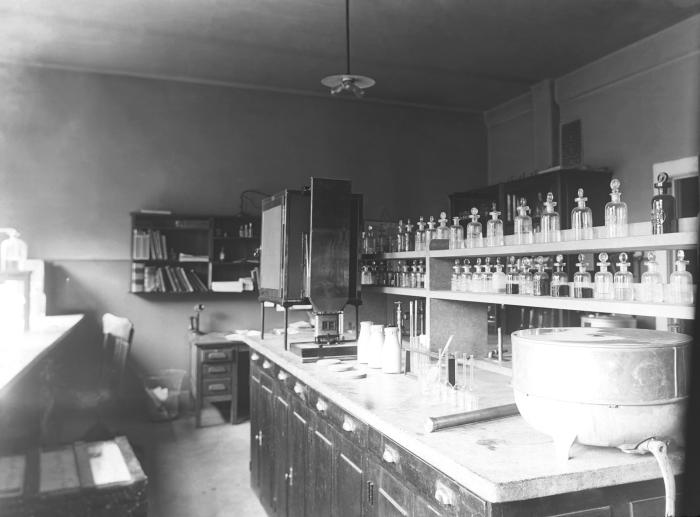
This historic 1919 photograph depicted the interior of a laboratory, and its inventory of portable laboratory testing equipment, used to determine the butter fat content in milk samples. The equipment had been unpacked and properly organized throughout the facility.